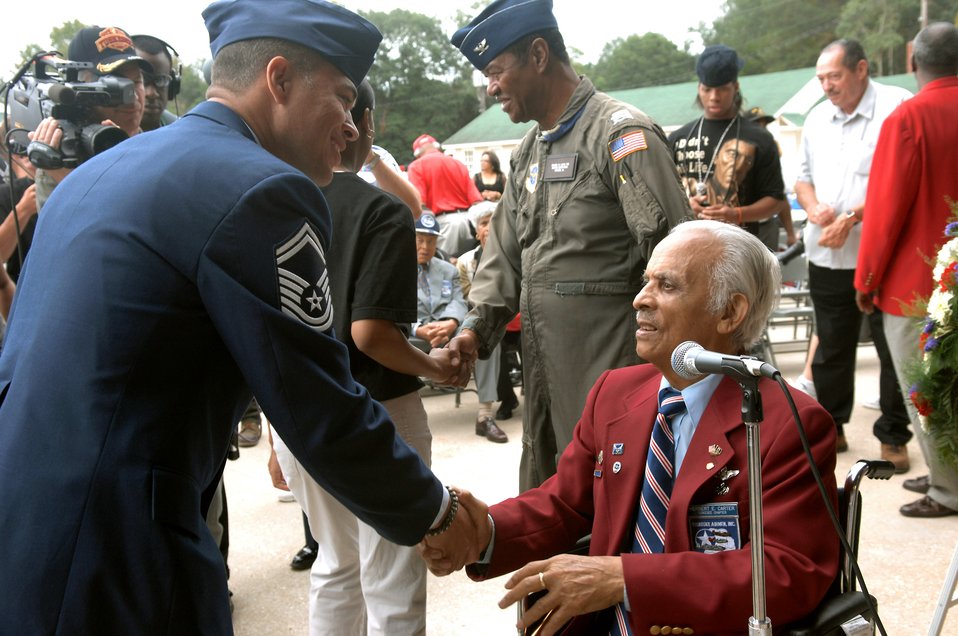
Remembering the Tuskegee Airmen

Retired Col. Herbert E. Carter shakes hands with an Airman who he just gave the oath of re-enlistment to Oct. 11 at Moton Field in Tuskegee, Ala. Colonel Carter is one of the original members of the Tuskegee Airmen and was on hand for the opening of the Tuskegee Airmen National Historic Site. Moton Field in the 1940s was the only primary flight training facility for the first African American pilot candidates in the Army Air Corps, these pilots are known as the Tuskegee Airmen.